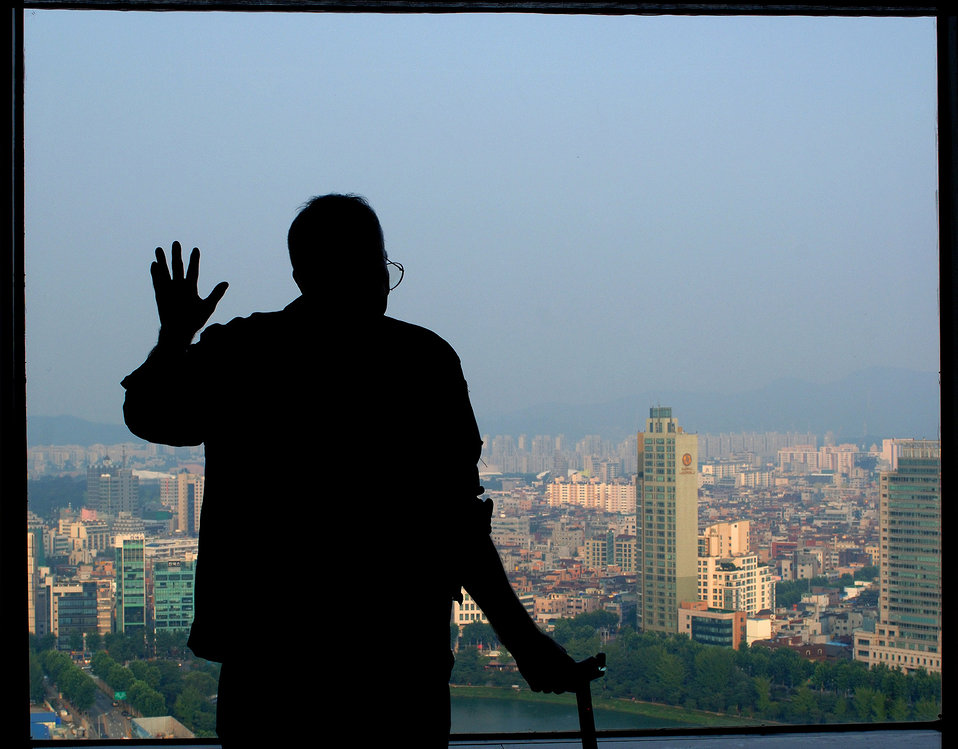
Revisiting the country of a forgotten war

Retired Lt. Col. Harold Fischer, a fighter ace with 10 confirmed kills and the 25th registered ace, looks out over the city of Seoul, South Korea, Sept. 10. He is touring South Korea this week with fellow veterans in observance of the Air Force's 60th anniversary.